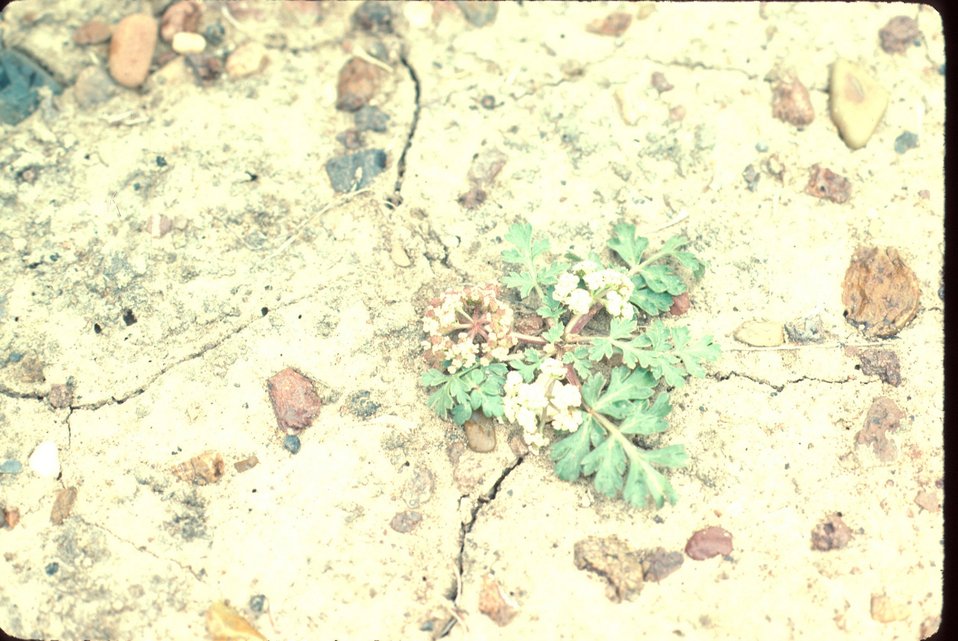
Cymopterus biscuit root Wildflower